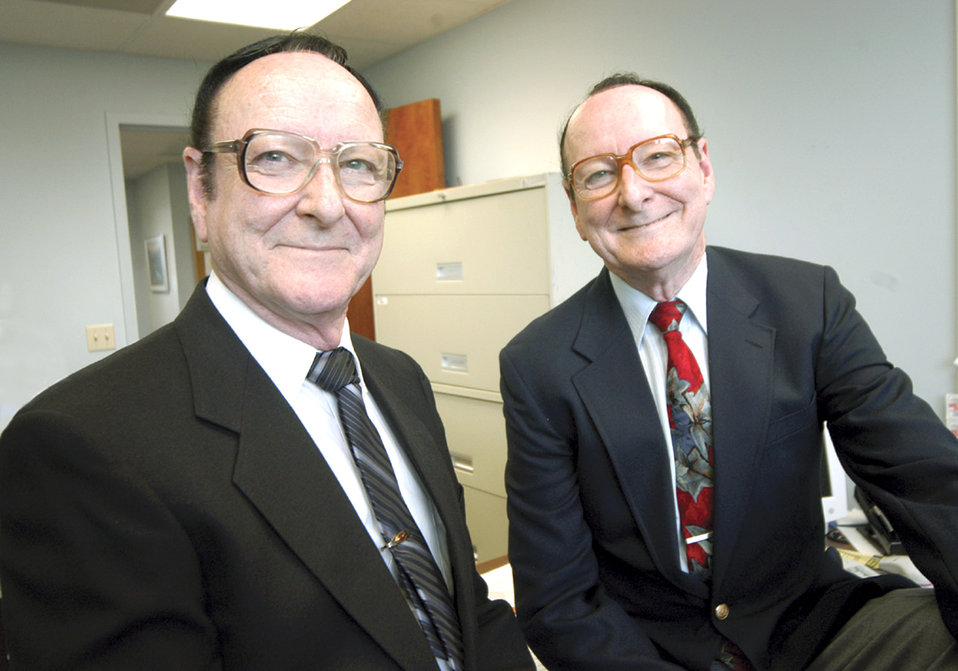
Twin program managers celebrate a half century of service

ROBINS AIR FORCE BASE, Ga. -- Bobby (left) and Billy Edwards received pins for 50 years of service recently. The 69-year-old identical twins joined federal service at Robins shortly after graduating from high school.